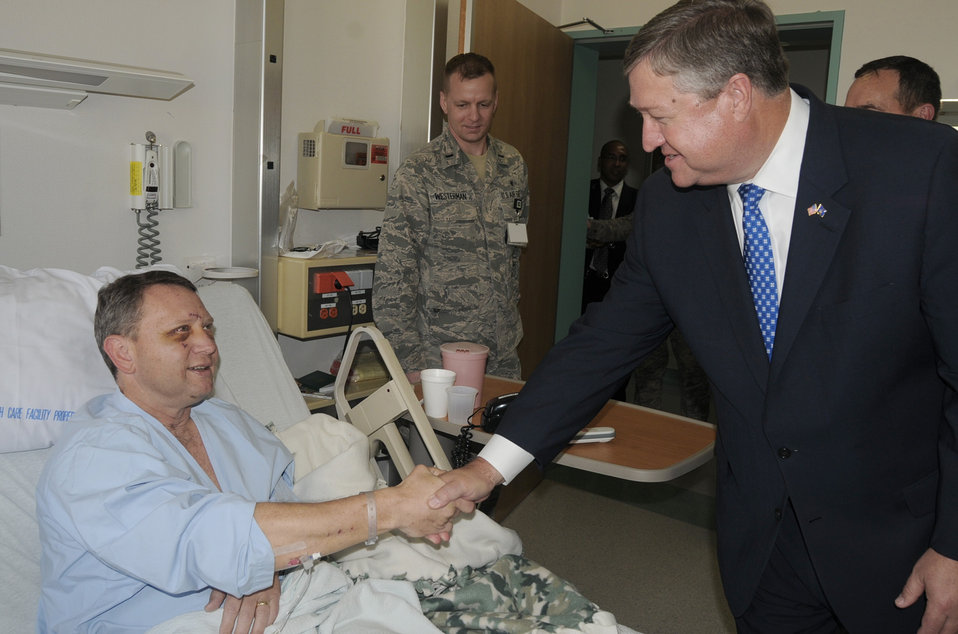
SecAF at Ramstein

Secretary of the Air Force Michael Donley visits Col. Bill Andersen June 18, 2011, at Landstuhl Regional Medical Center, Germany. Colonel Andersen is being treated for injuries sustained while deployed to Afghanistan as the vice commander of the 438th Air Expeditionary Wing and the deputy commander for NATO Air Training Command-Afghanistan.